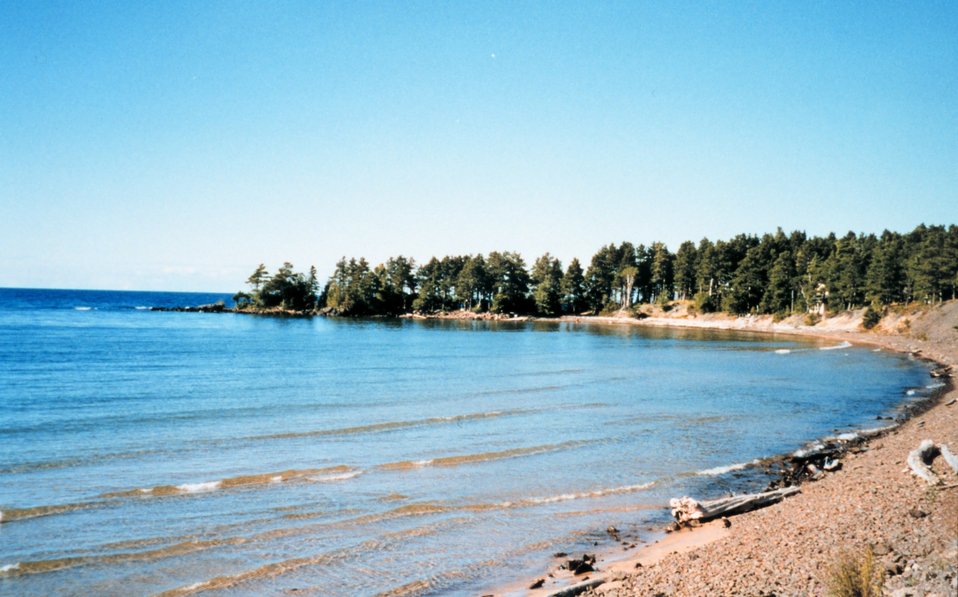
Houghton County